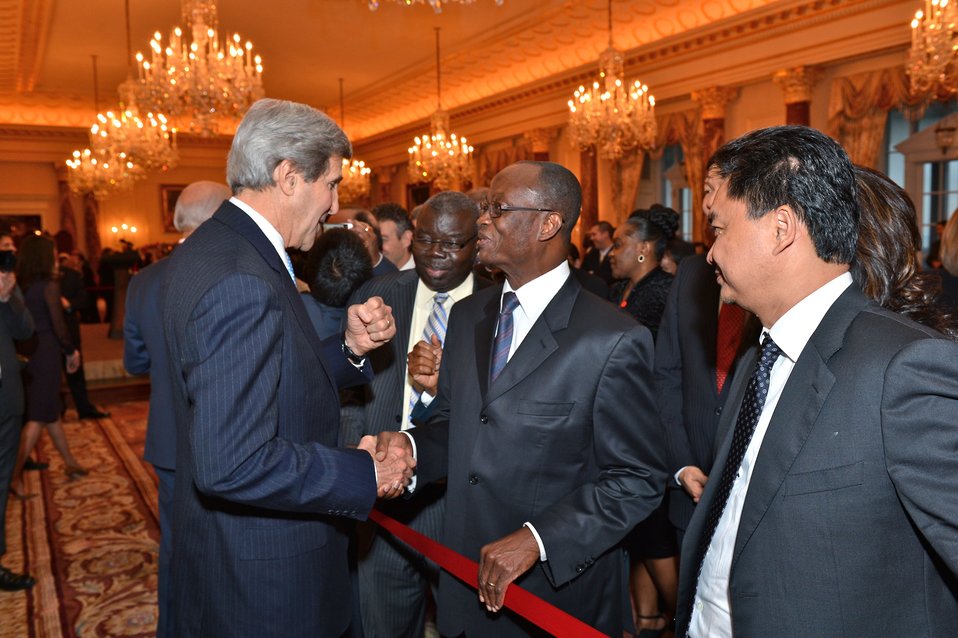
Secretary Kerry Chats With Guests

U.S. Secretary of State John Kerry chats with guests at the Holiday Reception for the Diplomatic Corps and their spouses at the U.S. Department of State in Washington, D.C., on December 9, 2013.